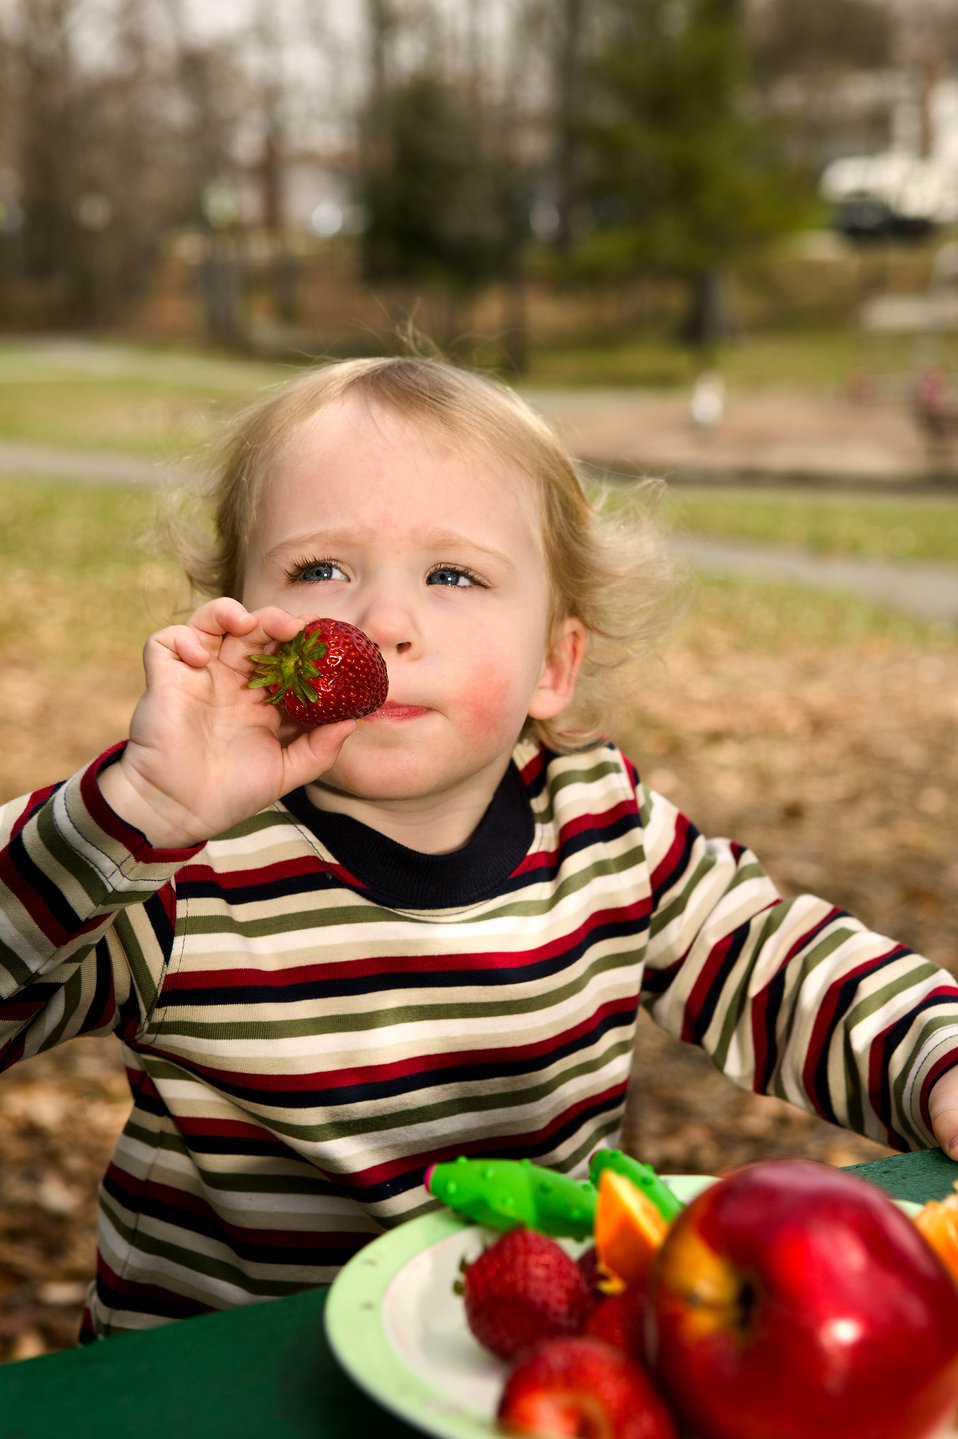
A 20-month-old boy enjoying a healthful snack on March 30, 2005.